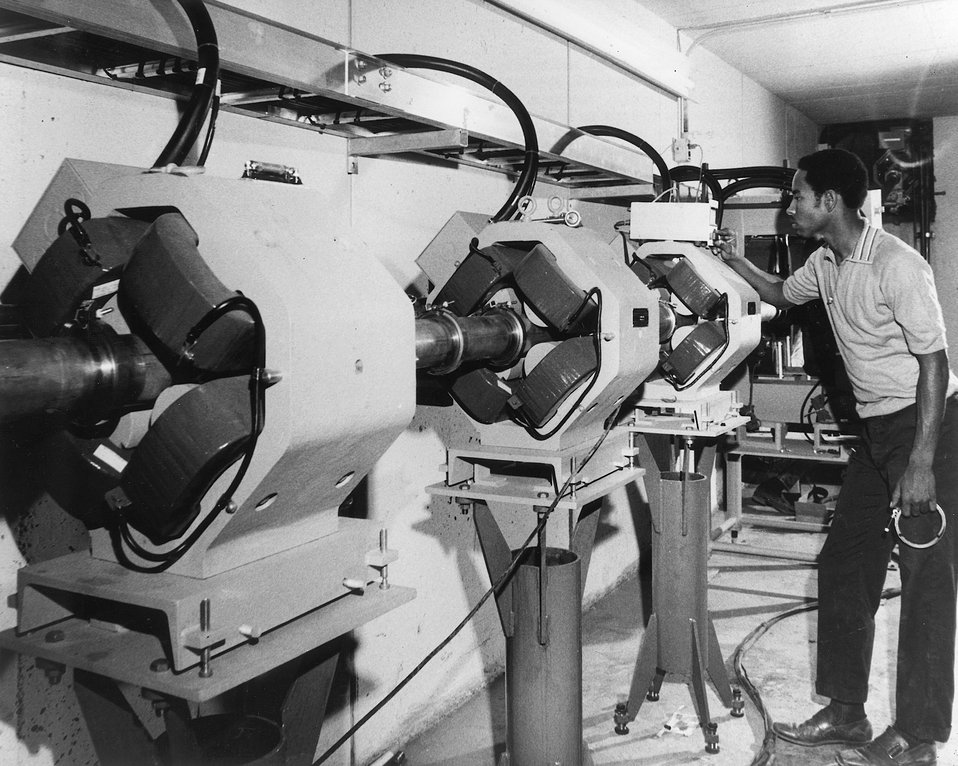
A technician at the AEC NAL near Batavia, Ill, checks a device that monitors the vacuum system in a section of the giant 200 BeV Synchroton being built here. c.1970